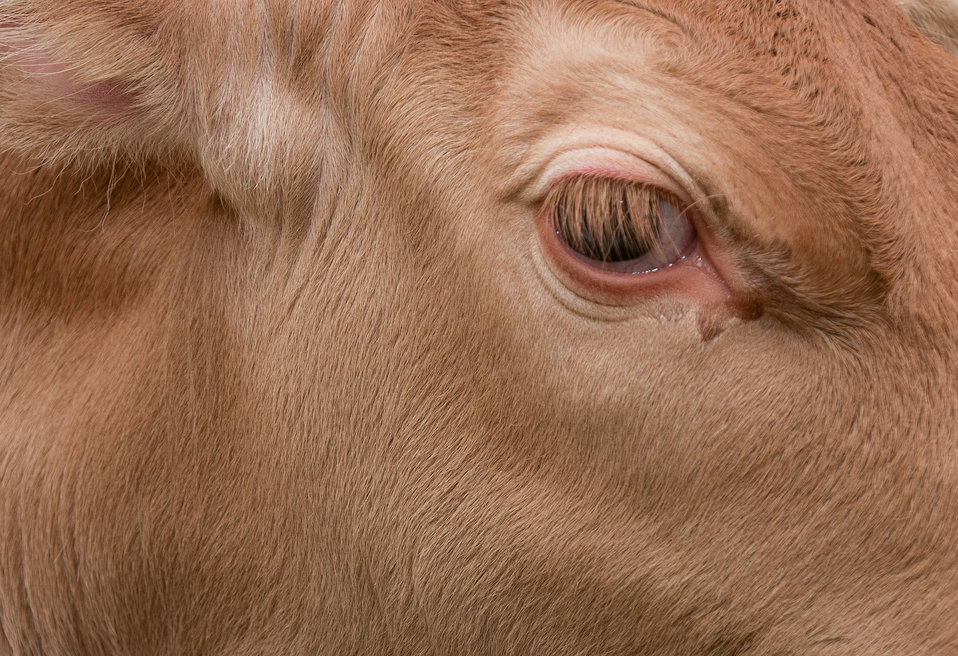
Less than a week old, this Guernsey calf weighs in at more than 170 pounds, and finds morning comfort against a cinderblock wall, on some soft ground, after an evening of summer rain at Nick’s Organic Farm, in Adamstown, MD, on Friday, July 12, 2013. She may grow up to provide nutritious Guernsey milk at the farm. The farm, owned by Nick Maravell, produces Black Angus beef, chicken, turkey, eggs, hay, soybeans, corn, alfalfa, orchard grass, rye; and other crops. The cattle are 100% grass-fed receiving certified organic pasture, certified organic hay (in winter), water and mineral salts mixed with sea kelp. The cattle are not fed hormones, antibiotics or animal products. Poultry feed from grain is ground from organic grain. The poultry also graze on organic pastures. The farm has conducted on-farm research with federal, state and non-profit agencies to refine organic practices. An organization such as the U.S. Department of Agriculture (USDA) Agricultural Research Service (ARS) center in Beltsville has been able to conduct research to improve organic crops and to breed and manage the cattle so that they have.